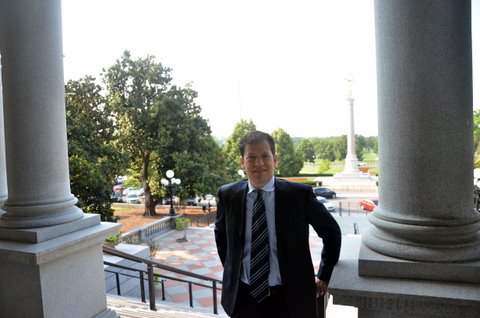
WH 2012 World Hepatitis Day Event